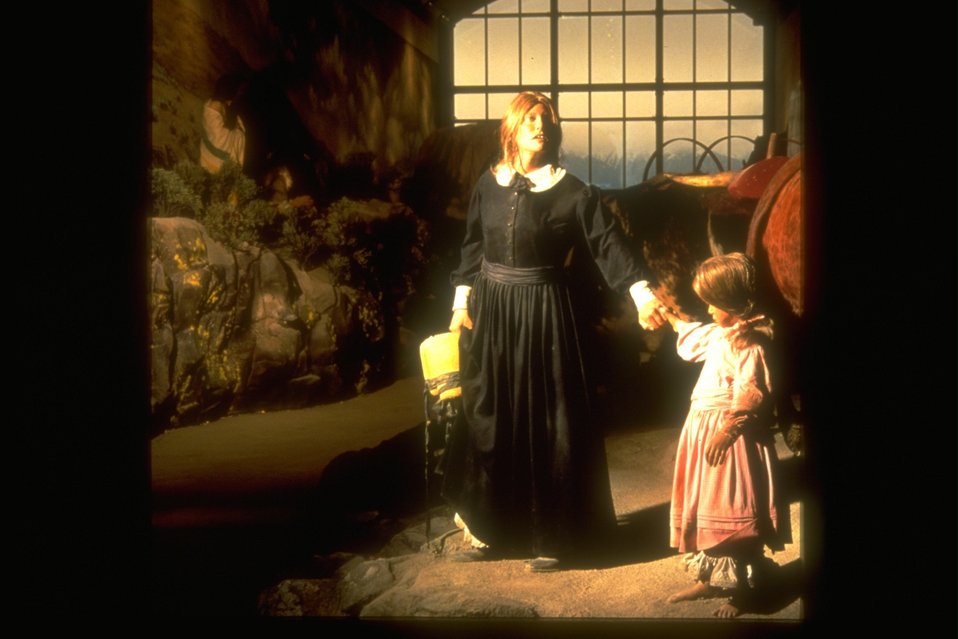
Pioneer mother and child standing in barely lit room holding hands. At the NHOTIC.